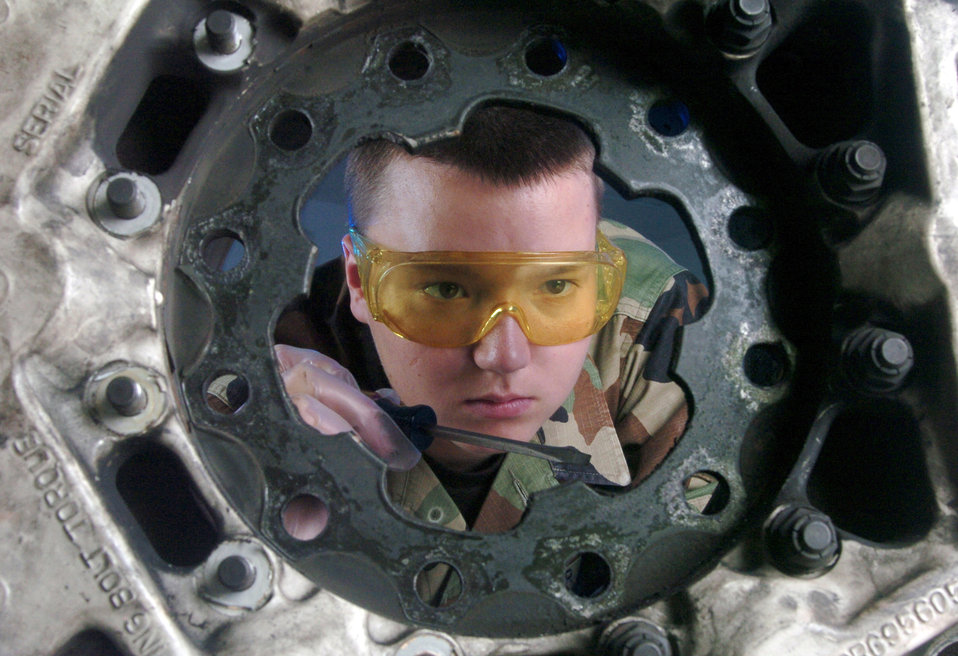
Gimme a brake

YOKOTA AIR BASE, Japan -- Airman 1st Class Christopher Griep inspects a C-130 Hercules brake assembly carrier. The Airmen of the 374th Maintenance Squadron's pneudraulics element overhaul, modify and test all pneudraulics components of C-130s assigned and in-transit here.